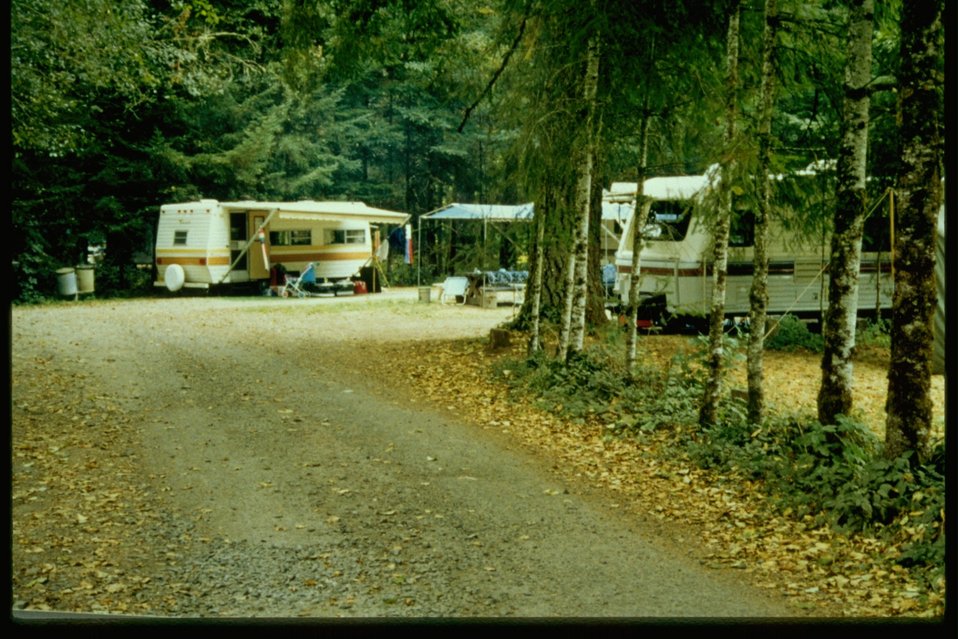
Vincent Creek Recreation Site. (Department of Forestry)